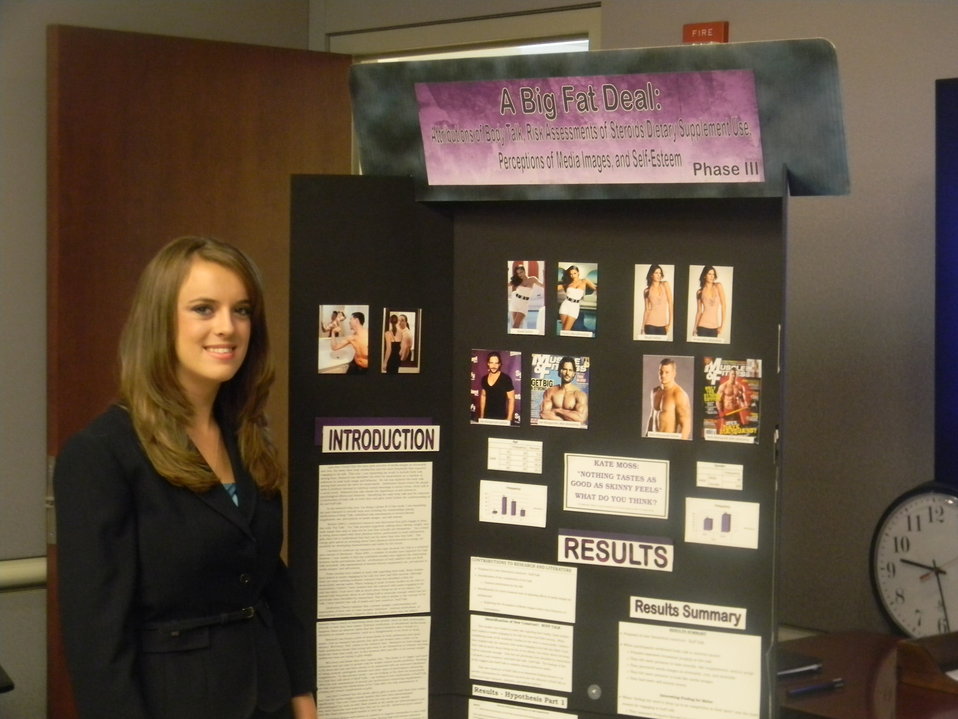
3rd place 2012 ISEF award winner L. Elisabeth Burton